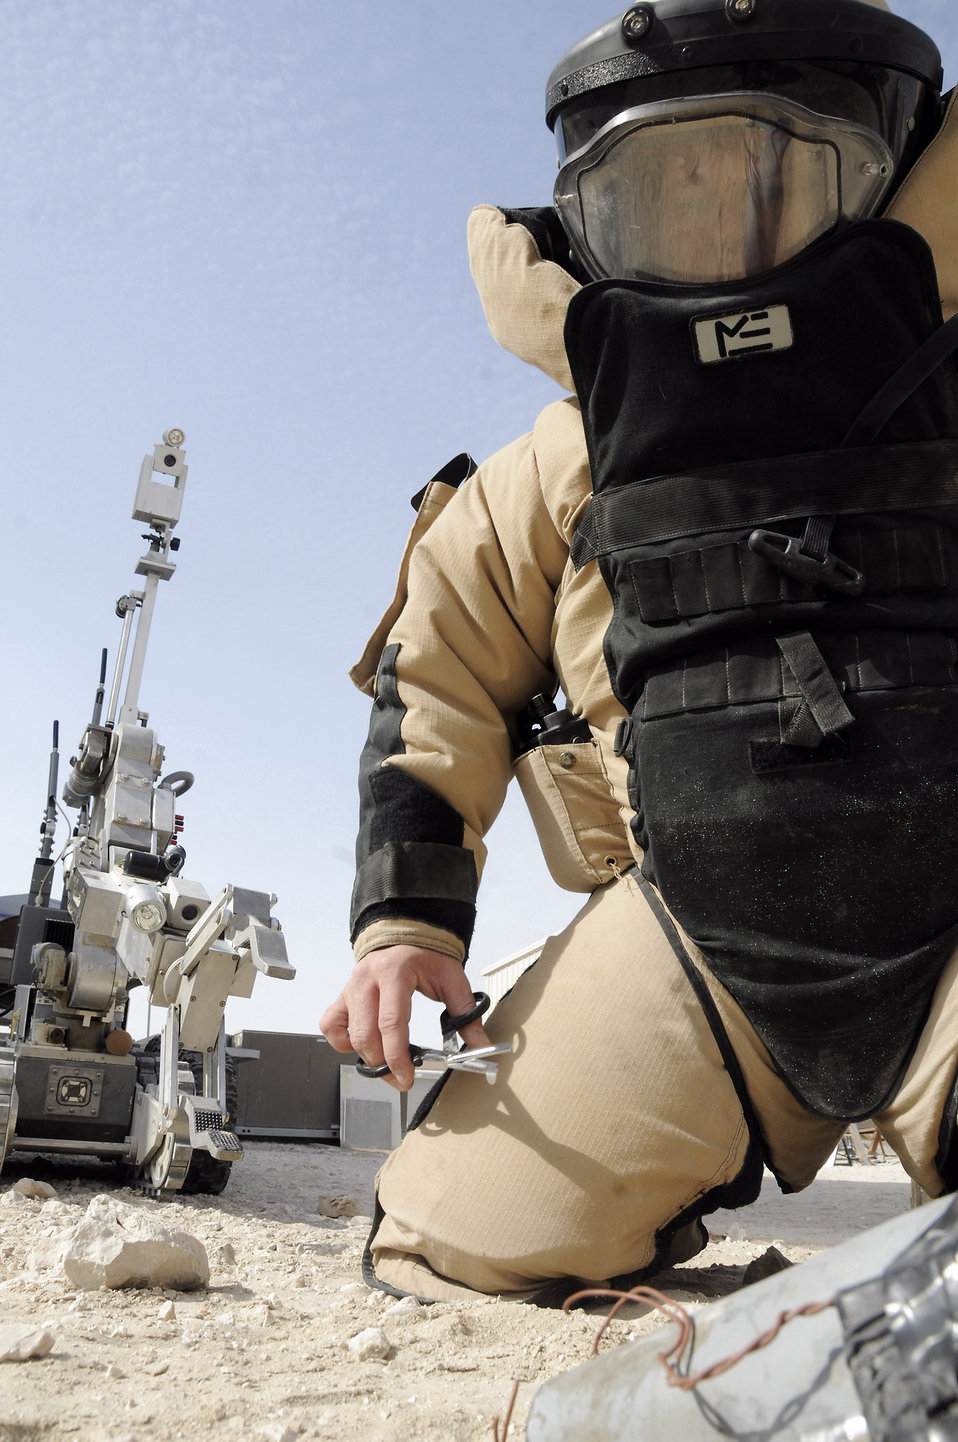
EOD Airmen stay one step ahead of the enemy

Master Sgt. John Beebe clears an improvised explosive device during training Dec. 15 at an air base in Southwest Asia. Sergeant Beebe is the Explosive Ordnance Disposal flight chief assigned to the 379th Expeditionary Civil Engineer Squadron. He is a native of Fort Lauderdale, Fla., and is deployed from Kadena Air Base, Japan.